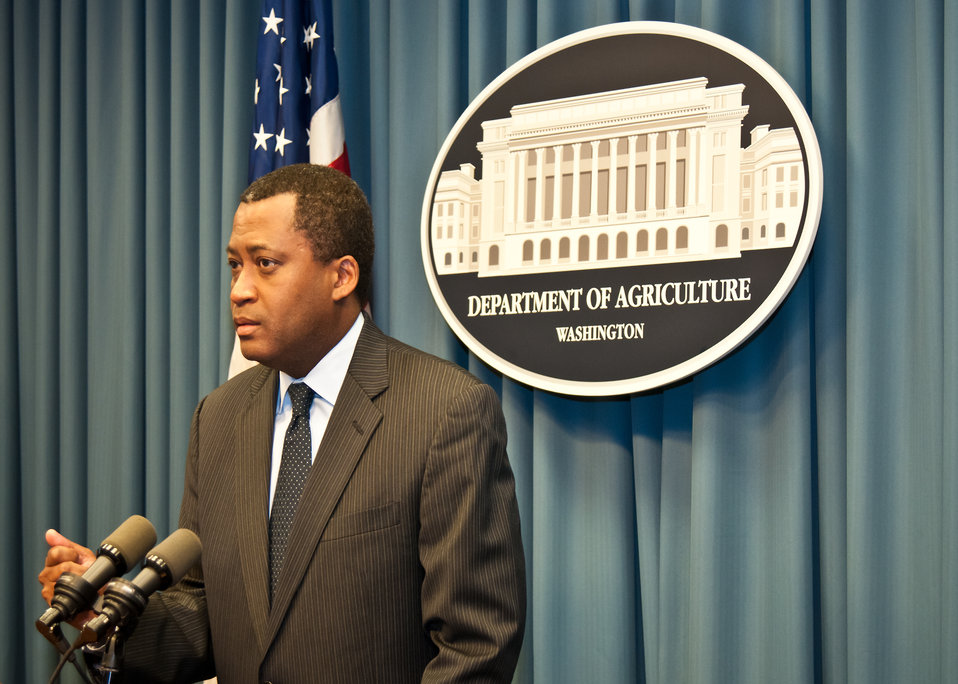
Agriculture Assistant Secretary for Civil Rights Dr. Joe Leonard welcomes United States Department of Agriculture (USDA) Hispanic Association of Colleges and University (HACU) and Tribal College summer interns during their orientation at USDA in Washington, DC, Monday, Jun. 6, 2011. The HACU/Tribal College National Internship Program represents more than 400 colleges and universities committed to higher education in the U.S., Puerto Rico, Latin America, Spain and Portugal and places student interns each year with federal agencies in Washington, DC or in field offices around the country.